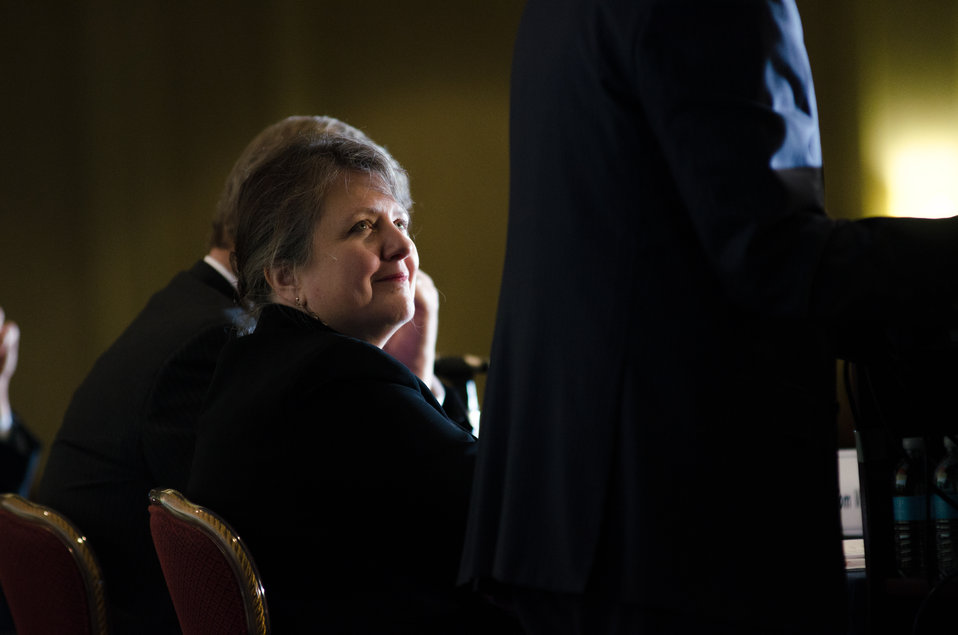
Agriculture Deputy Secretary Kathleen Merrigan, left, looks on as Former U.S. Senator from South Dakota Thomas A Daschle, right, speaks on Plowing Ahead: Farming, Food Security, and the Future as the Distinguished Guest Speaker at the Opening session of the 2013 Agriculture Outlook Forum, in Arlington, VA, on Thursday, February 21, 2013.